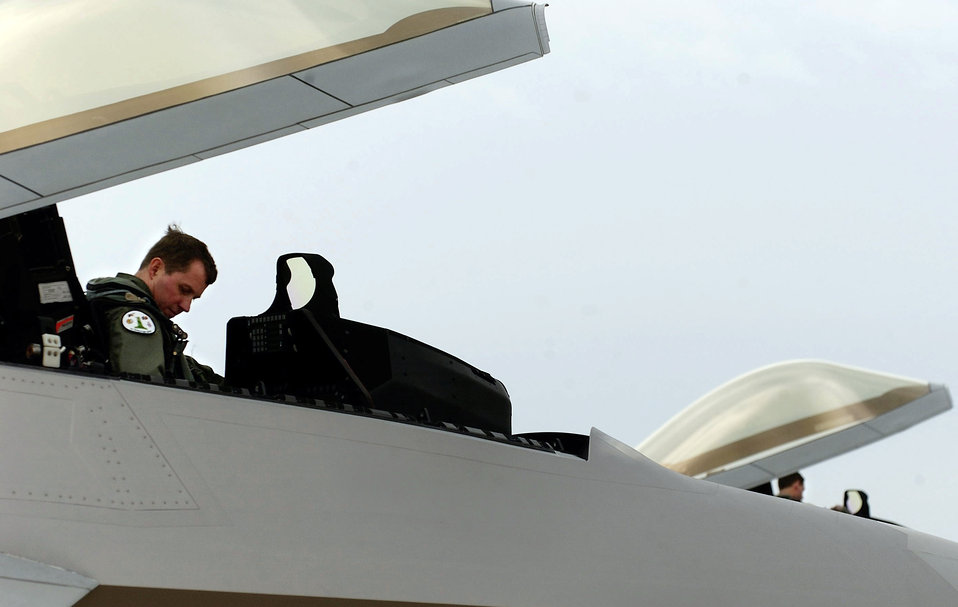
Operation Noble Eagle

LANGLEY AIR FORCE BASE, Va. (AFPN) -- Col. Thomas Bergeson and Lt. Col. James Hecker prepare to take flight in their respective F-22A Raptors Jan. 21 during an Operation Noble Eagle mission. This historical event marks the first time the F-22A Raptor is participating in the joint services operation to protect American soil. Colonel Bergeson is the 1st Operations Group commander. Colonel Hecker is the 27th Fighter Squadron commander.